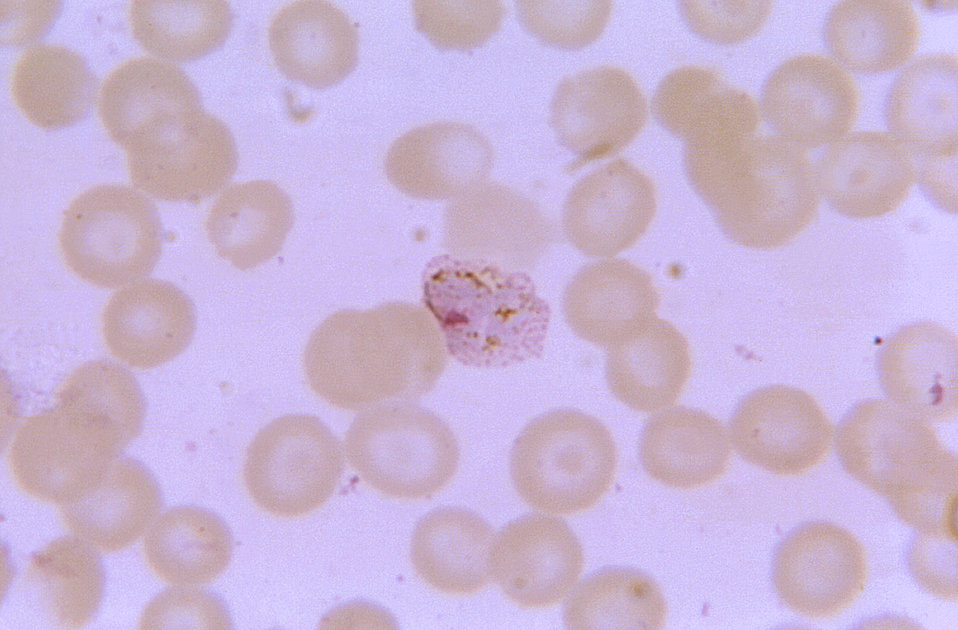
Magnified 1125X, this thin film blood smear micrograph depicts an old amoeboid Plasmodium vivax trophozoite, displaying a distinctly pigmented cytoplasm.